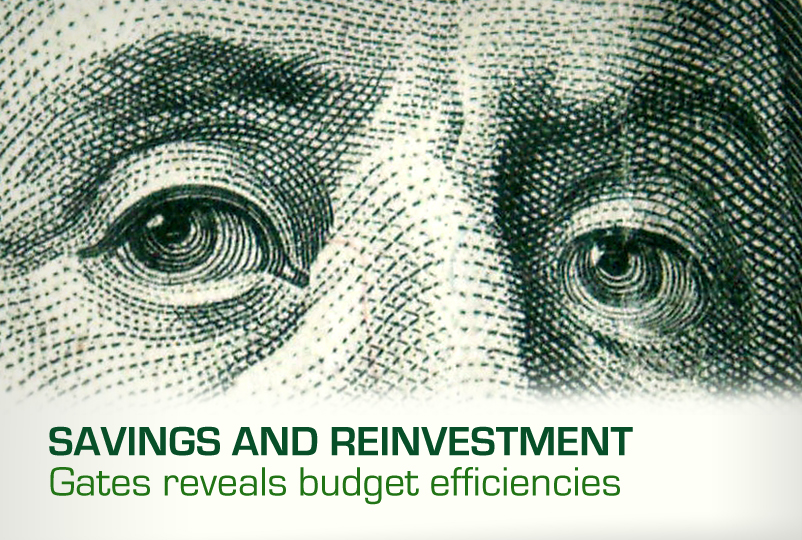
Budget efficiencies